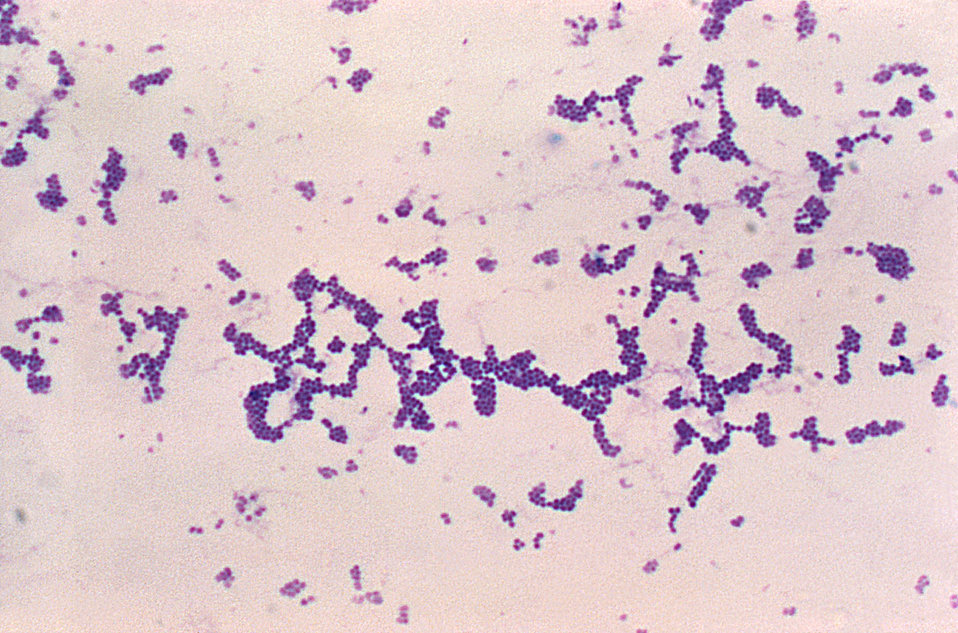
Photomicrograph of spherical (cocci) Gram-positive Staphylococcus aureus bacteria magnified 250X.